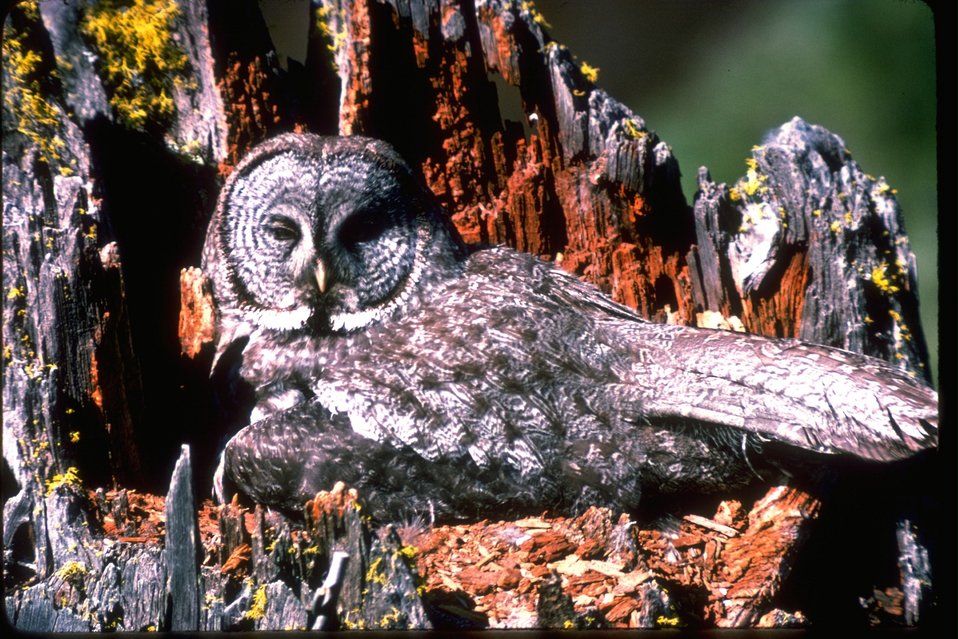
A Great Gray owl sitting in a dead tree stump.